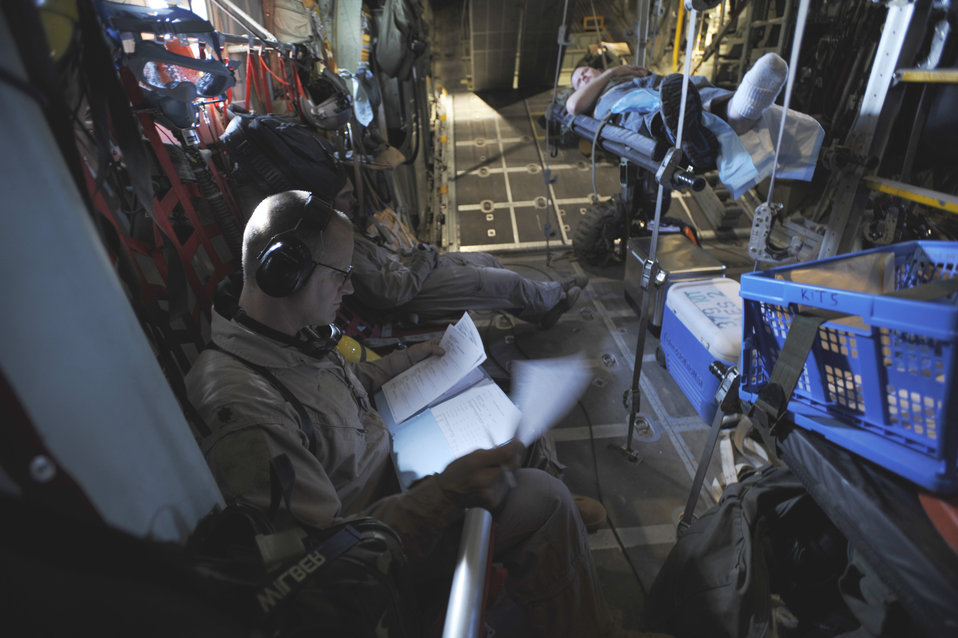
Flying medics provide theater-wide care

Maj. Scott Wilber reviews medical records during aeromedical operations April 23 over Southwest Asia. Major Wilber is a flight nurse from the 379th Expeditionary Aeromedical Evacuation Squadron.